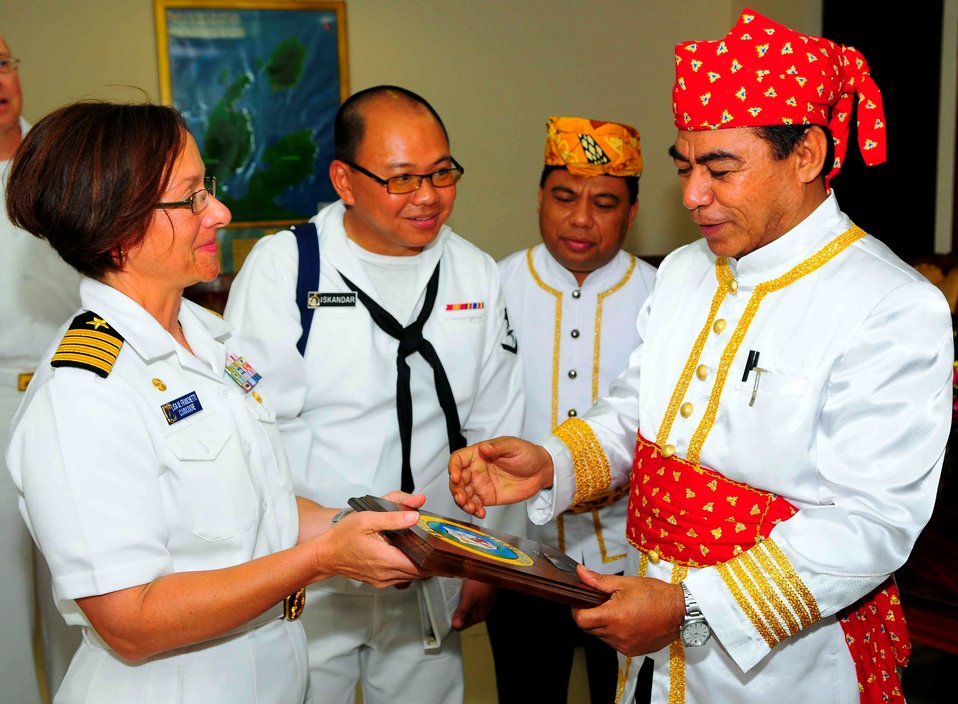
Pacific Partnership 2010 Commander Capt. Lisa M. Franchetti presents a plaque to Indonesian official Hein Namotemo, marking the beginning of operations by Military Sealift Command hospital ship USNS Mercy (T-AH 19) crewmembers in support of Pacific Partnership 2010 in Tobelo, Indonesia, on July 13, 2010. Pacific Partnership 2010 is the fifth in a series of annual U.S. Pacific Fleet humanitarian and civic assistance endeavors to strengthen regional partnerships.